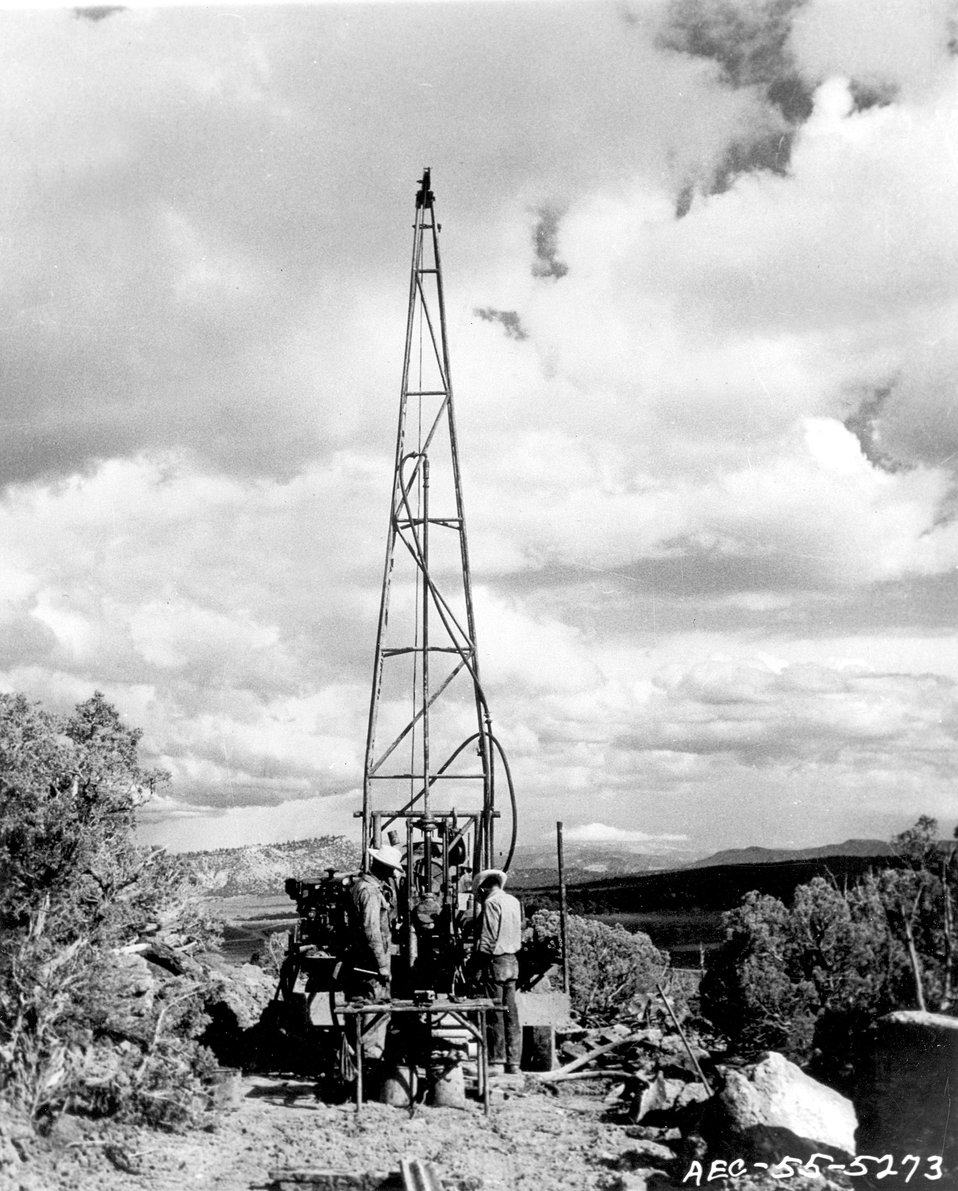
Drilling off Uranium Point in the East Gas Hills of Fremont County Wyoming. c. 1976